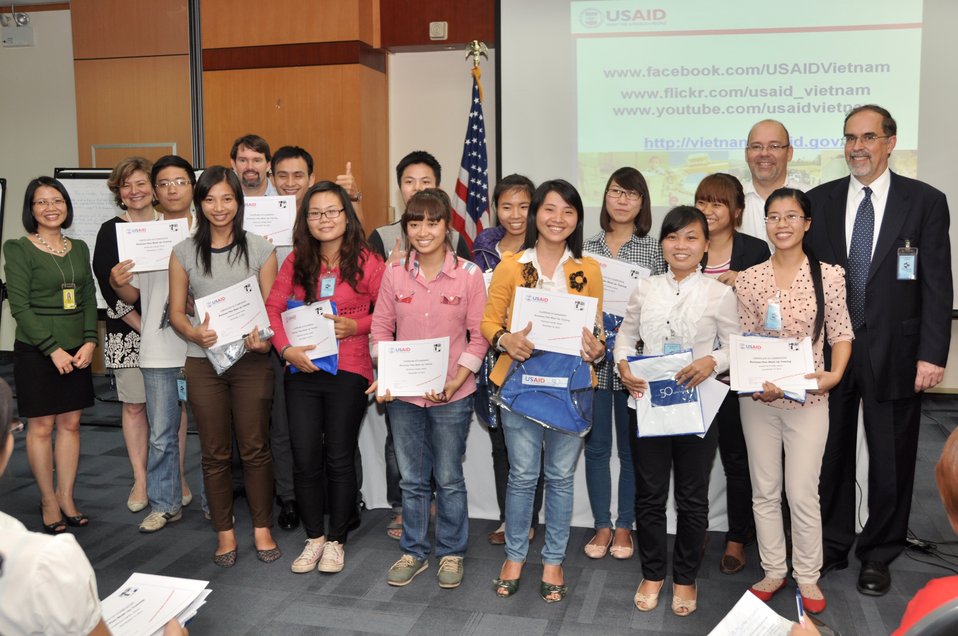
Vietnamese university students join the Business Plan Mashup exercise

Photo: @USAIDVietnam, November 16, 2012